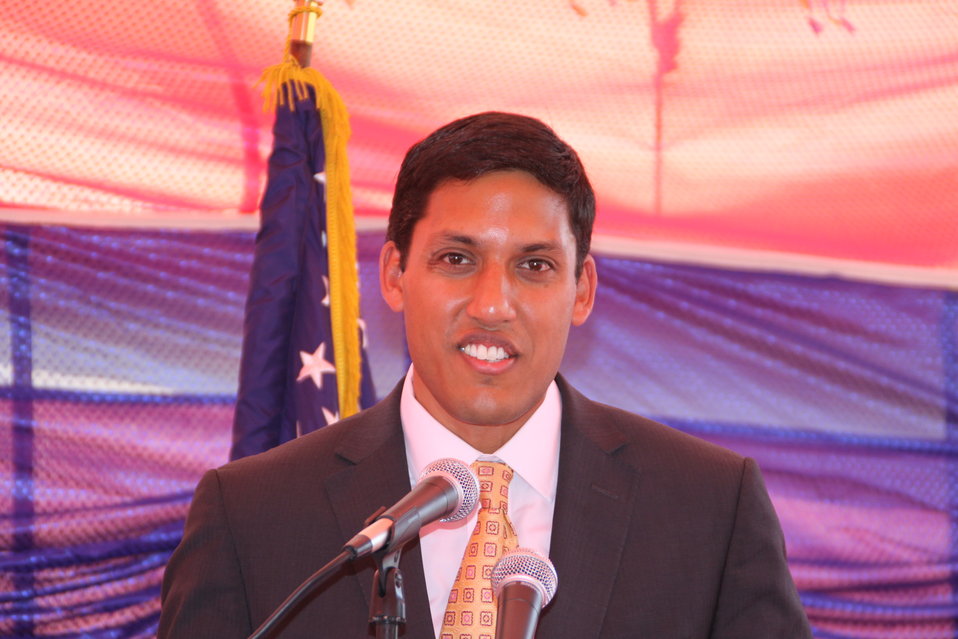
Badam Bagh Farm